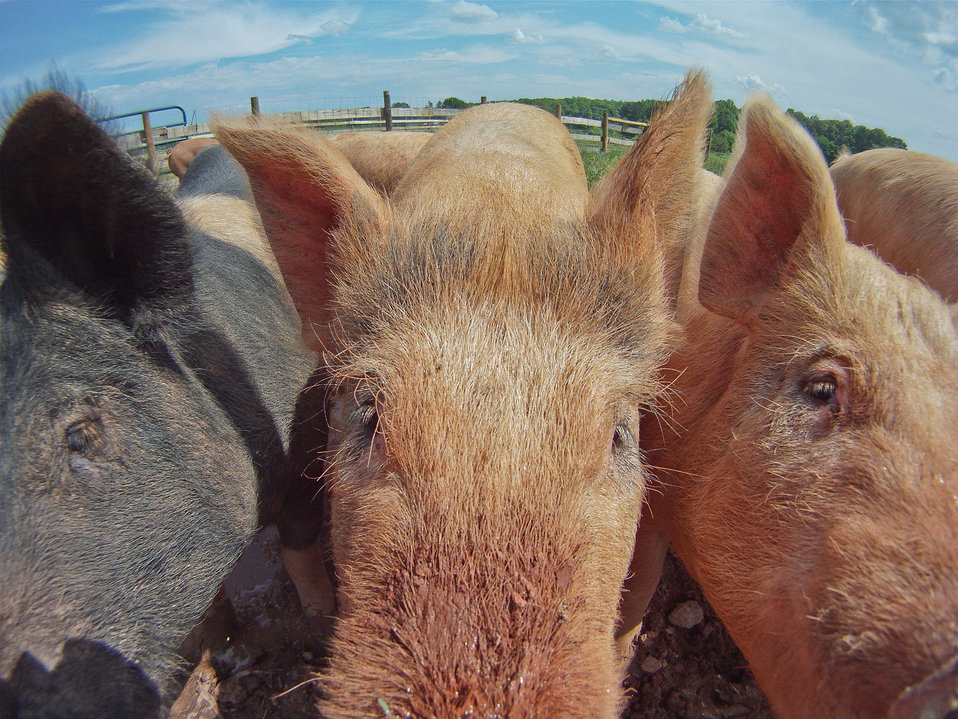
Pigs at Keenbell Farm are pasture raised by 3rd generation farmer CJ Isbell in Rockville, VA, on Friday, May 6, 2011. The farm was established in 1951, and produces grass-fed beef, pastured pork, and free-range eggs beyond organic standards. Keenbell Farms pork products range from sausage, to bacon, pork chops, roasts, bratwurst, and many more. A majority of their diet is grass and roots. They are offered corn, soybean, minerals, and a hay mixture that was developed by the farm. Raising the pigs on pastures reduces odor problems, and avoids hazardous waste issues by distributing the manure. Pastures are rotated at least, every 90 days to allow the grass and land to re-grow. Keenbell and other farms produce meat products for Fall Line Farms food hub that offer a wide variety of household food staples and specialty items. Members can pick their customized orders from an ever changing inventory of fruits, vegetables, meats, soaps, eggs, cheeses, flowers, honey, pastas, sauces, syrups, baked goods, mushrooms, flour and grains. Suppliers post what they have to sell on Lulus Local Food online listing where customers can make their selection. Every Thursday, suppliers team up to deliver customized orders to, one of several pick-up points, designated by the customer in or around the Richmond, VA area.